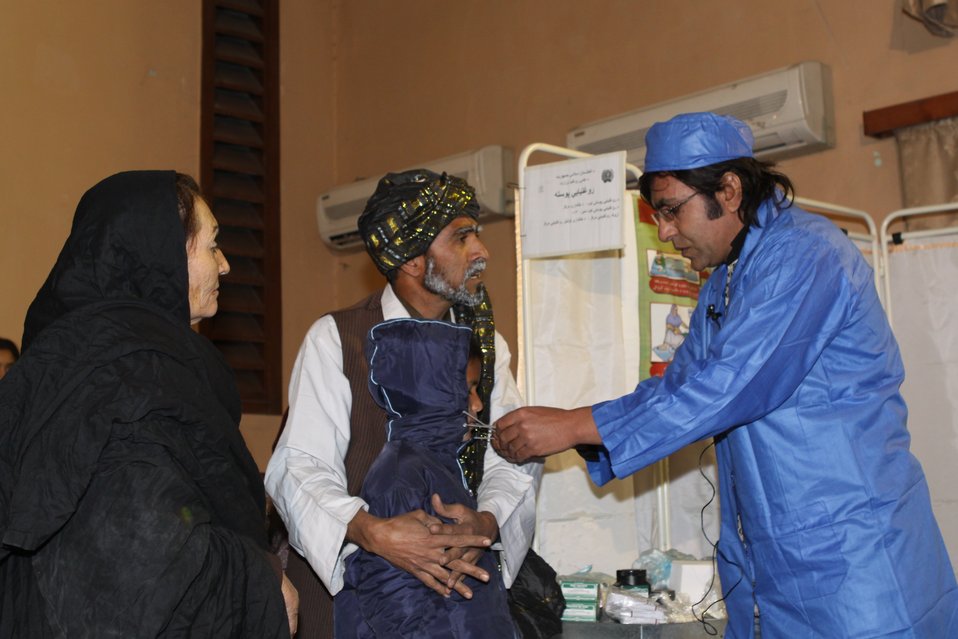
Community Health Workers Celebrated

Kabul, Afghanistan | December 5, 2010 — In support of the United Nations designated International Volunteer Day for Economic and Social Development, Afghanistan’s Ministry of Public Health celebrated its annual Community Health Worker Day today. Acting Minister of Public Health Dr. Suraya Dalil, USAID Senior Deputy Mission Director Robert Hellyer, other government officials, and international donors joined in recognizing the critical contribution of community health workers in Afghanistan and encouraging them to continue their voluntary support to their communities.
The event praised the contributions of the more than 22,000 volunteers throughout the country who deliver community level health-education, counseling, and services out of village health posts located in private homes. The Ministry of Public Health envisioned that community-based healthcare programs will actively encourage communities and families to adopt healthy lifestyles and behaviors, and provide families access to high quality and socially acceptable preventative medicine and life-saving services.
“We have 22,000 community health workers in Afghanistan that are able to implement the basic and standard medicines. They all have been trained through a job description,” said Minister Dalil. Addressing the health workers, she added, “I am proud and feel powerful that I have people like you.”
USAID-funded health projects collaborate closely with the Ministry of Public Health to improve the health and nutritional status of Afghans, provide quality primary healthcare, and promote healthy behaviors at the community and household-levels. USAID supported the training of more than 9,000 of the volunteer community health workers currently working in Afghanistan.
“On behalf of the American people, I congratulate the Community Health Workers for their diligence to gain the skills and knowledge necessary to serve their communities in this important role,” said USAID Senior Deputy Mission Director Hellyer. “USAID strongly supports community based health care and believes that quality community-based health services are essential to reaching Afghanistan’s Millennium Development Goals.”
To support the Basic Package of Health Services, USAID assisted in developing the community health worker training manual, helped train community health worker supervisors and master-trainers, facilitated in-service training, and produced and developed reporting tools, job aids, and education materials.